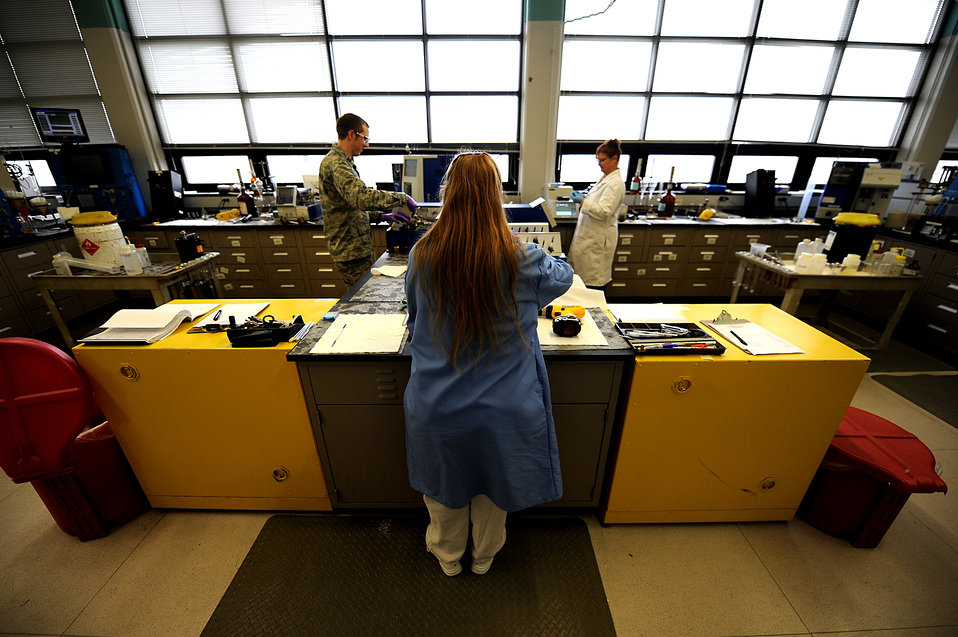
Air Force Research Laboratory

Capt. Michael Cole (left), Jennifer Engelman (center) and Janet Stewart perform fuel quality assurance testing at the Air Force research Laboratory Feb. 8, 2012 at Wright Patterson Air Force Base, Ohio. Cole, Engelman and Stewart are all chemists assigned to the Air Force Research Laboratory.